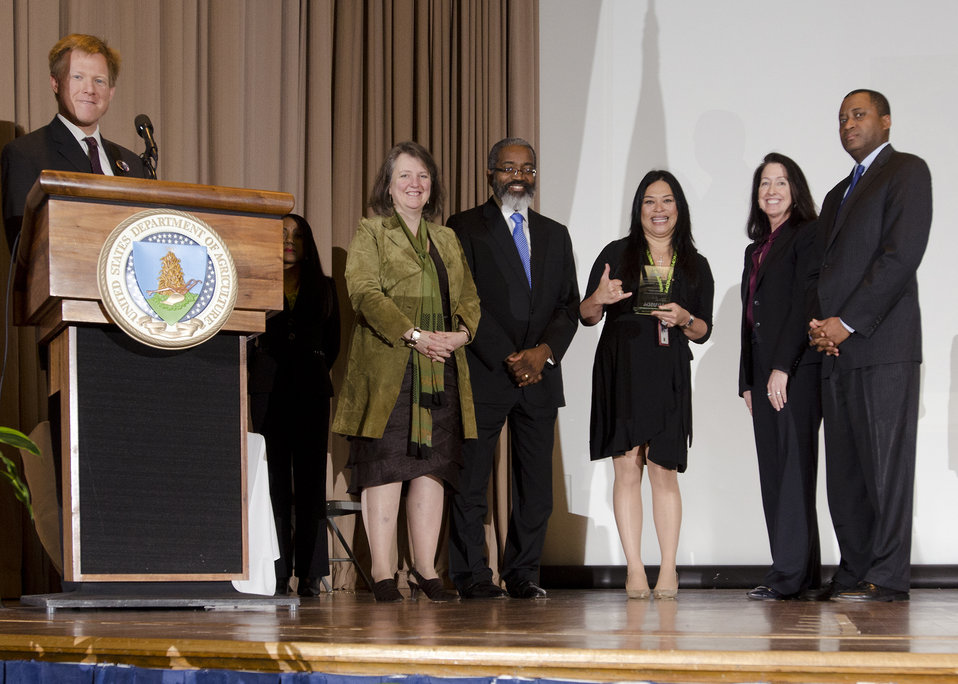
U.S. Department of Agriculture (USDA) Forest Service Administrative Support Assistant from Hilo, HI Pam Holton receives the Dr. Martin Luther King, Jr. National Service Day Drum Major Service Award at the Jefferson Auditorium in Washington, D.C. on Tuesday, Jan. 15, 2013 (L to R Agriculture Director Faith Based and Neighborhood Partnerships Max Finberg (at podium), Agriculture Deputy Secretary Kathleen Merrigan, USDA Acting Assistant Secretary for Administration Dr. Gregory Parham, Pam Holton, Mary Skiles, and Agriculture Assistant Secretary for Civil Rights Dr. Joe Leonard).